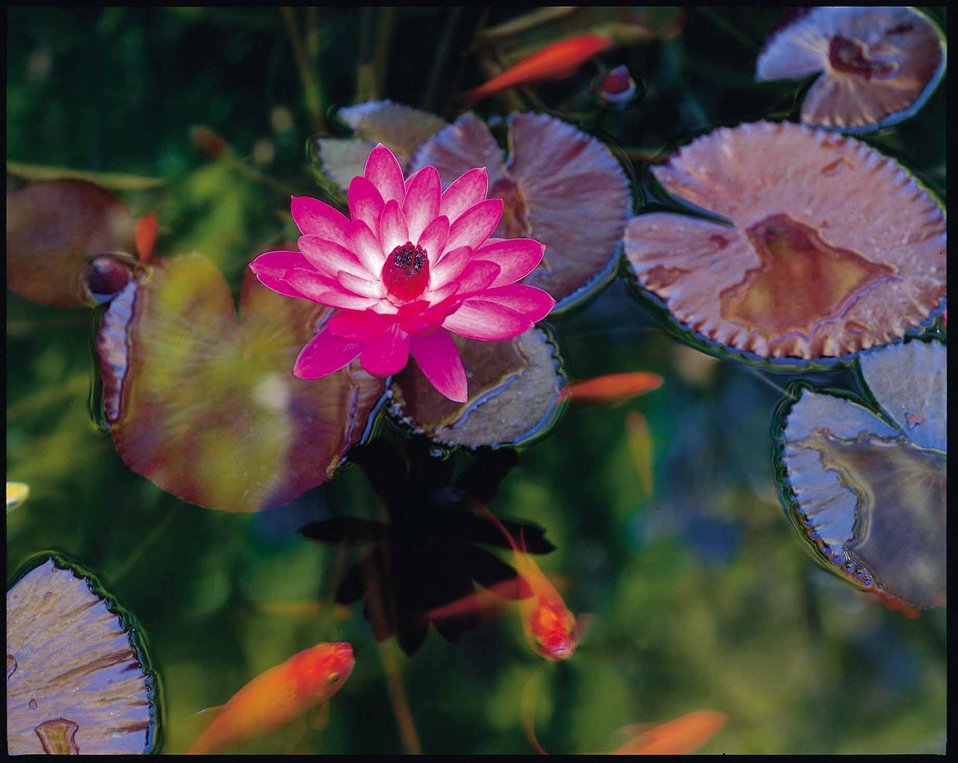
Goldfish in a backyard pond.